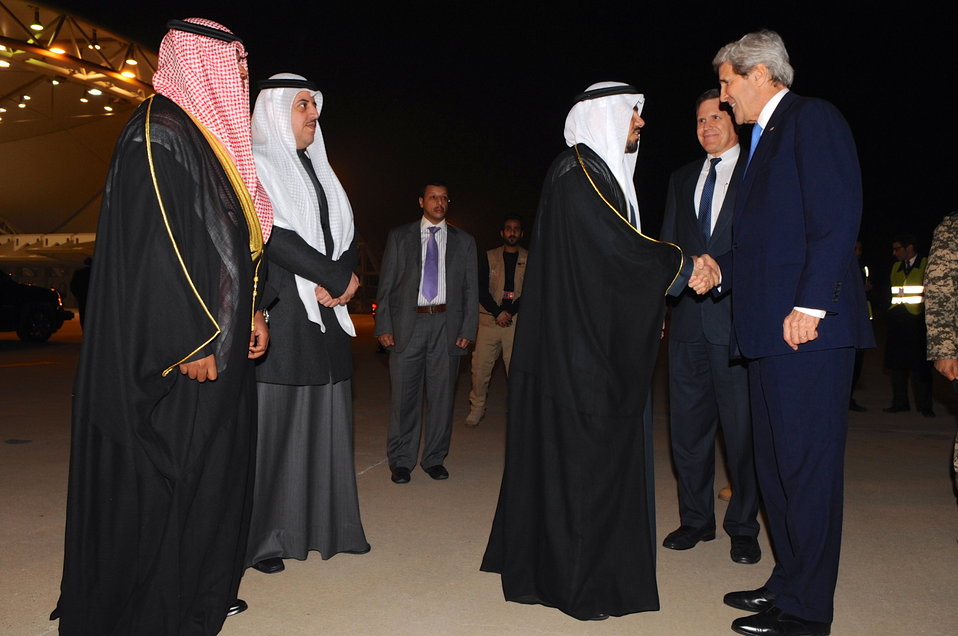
Secretary Kerry Arrives in Kuwait for Syria Donors' Conference

U.S. Secretary of State John Kerry is greeted by U.S. Ambassador to Kuwait Matthew Tueller and government officials as he arrives in Kuwait City on January 14, 2014, to attend the Syria Donors' Conference.